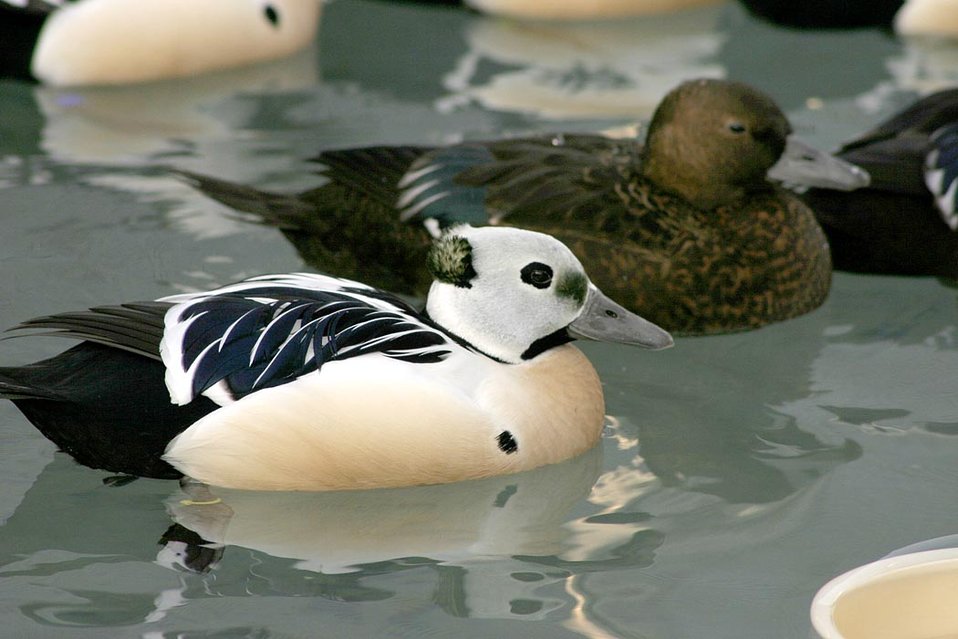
Threatened Steller's eider (Polysticta stelleri) male and female, Alaska SeaLife Center, Seward, Alaska